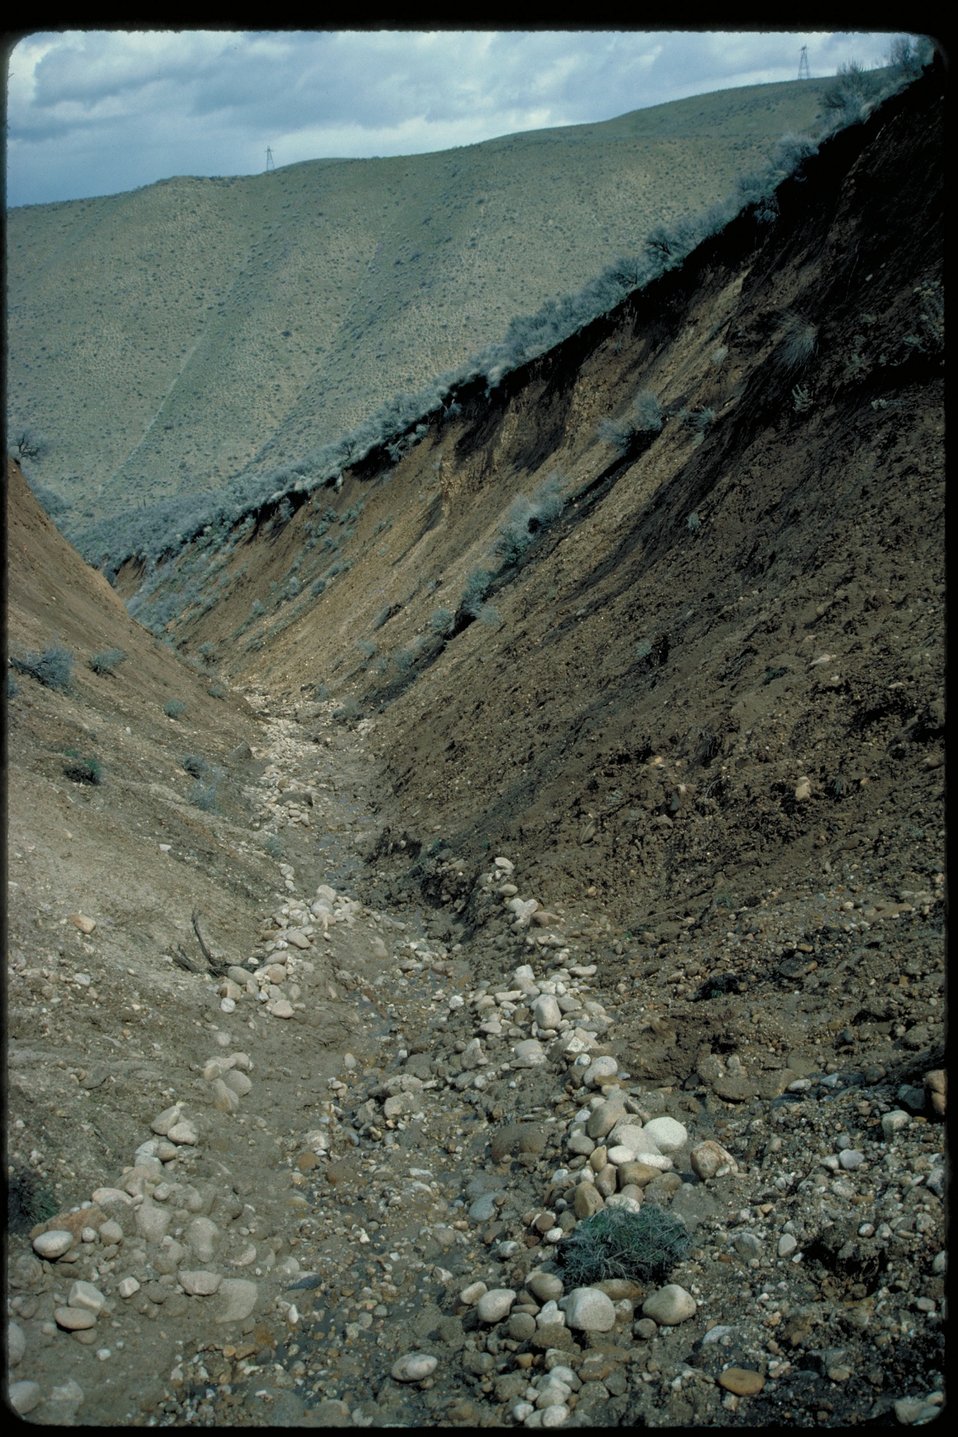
Little Gulch erosion Boise Front Four Rivers Field Office LSRD Lower Snake River District